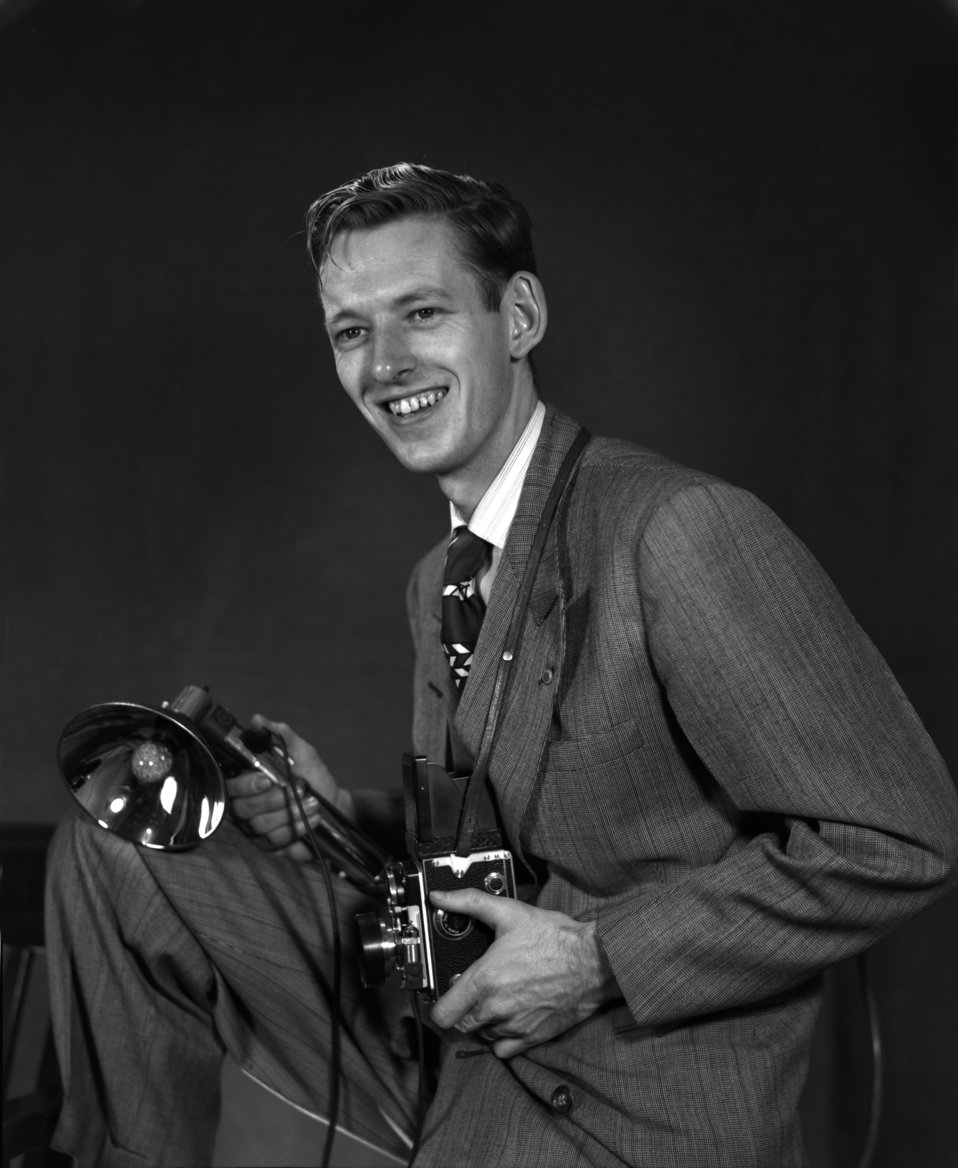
Ed Westcott AEC Photographer Oak Ridge

004070-2
photo by Lillian Stokes Ed Westcott AEC Photographer. Ed is 25 years old in this image. Oak Ridge Tennessee 12/9/1947